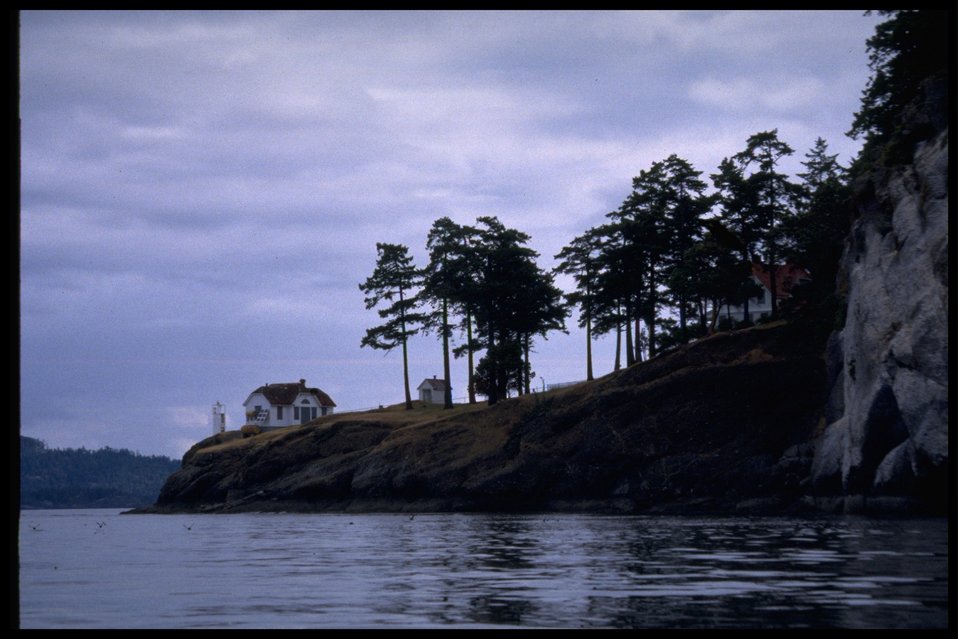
Turn Point from water with light station and buildings. Series of 17 photos.